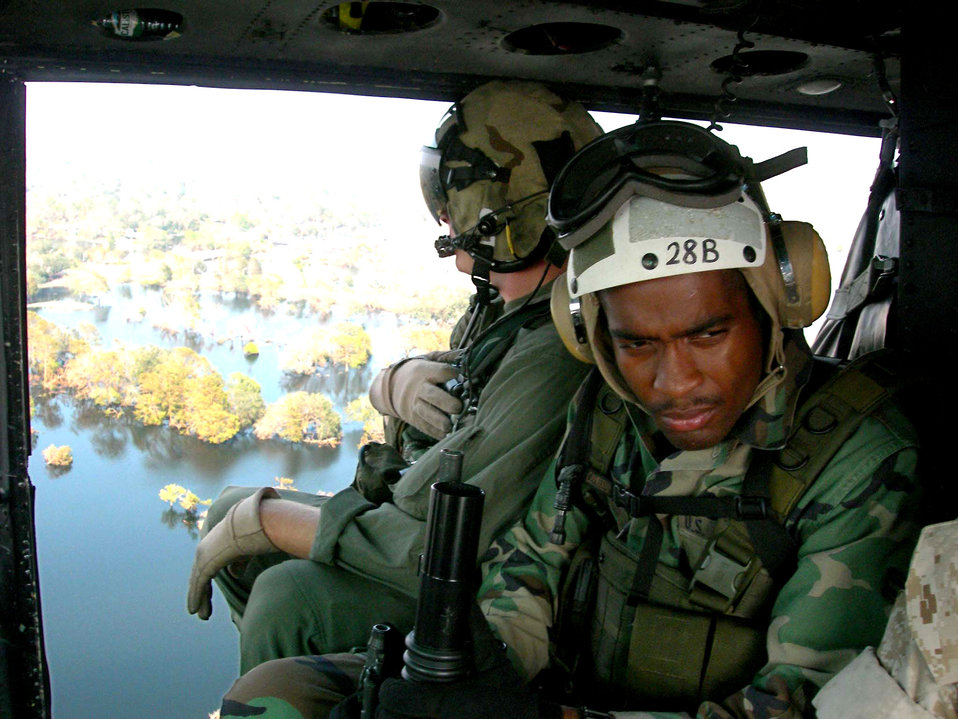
Airman views devastated hometown from air

NEW ORLEANS -- Airman 1st Class Brandon Johnson surveys flood-damaged New Orleans, his hometown, while aboard a Navy helicopter. He and other Airmen with the 822nd Security Forces Squadron from Moody Air Force Base, Ga., were providing security for news media aboard.